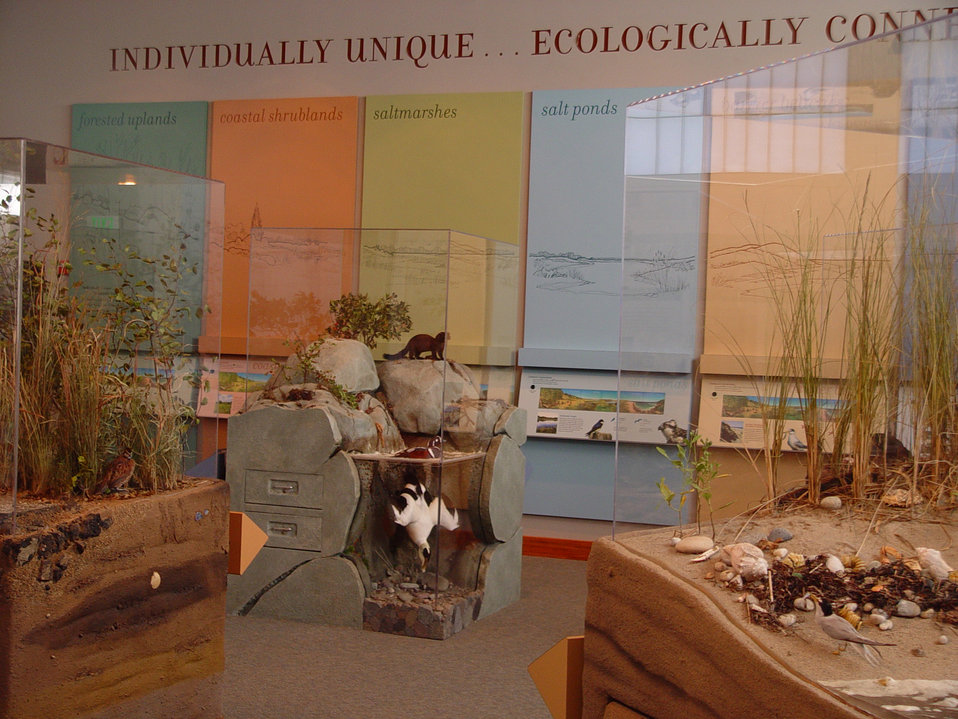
Kettle Pond Visitor Center in Charlestown, RI.